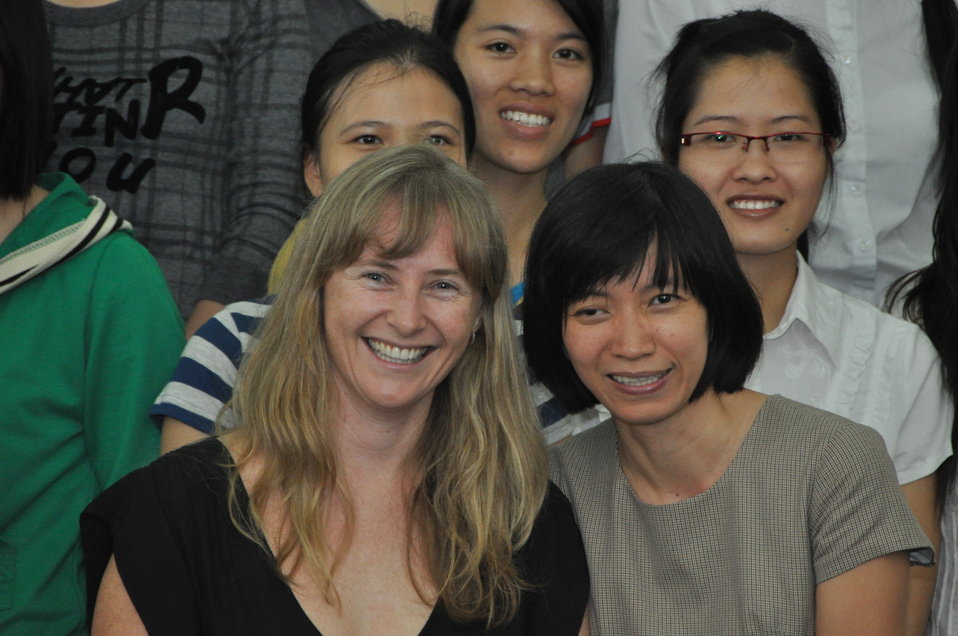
EPT PREDICT Pathology Workshop Group Shot